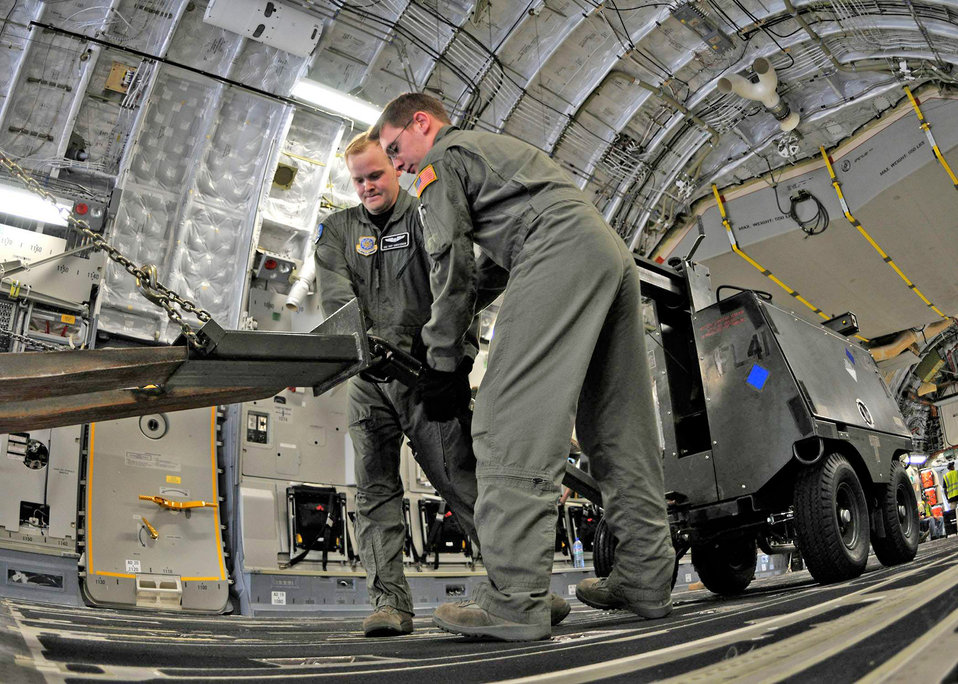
17th Air Force members support presidential visit to Ghana

Senior Airmen Toby Christiensen and Paul Hedges connect a floodlight to a forklift during offloading operations of aerospace ground equipment at Kotoka International Airport July 6 at Accra, Ghana. The Airmen are among more than 150 Airmen, Sailors and Marines in Ghana and Sailors aboard the USS Iwo Jima who form a task force supporting President Barack Obama's visit July 10 and 11. Airmen Christiensen and Hedges are loadmasters with the 8th Airlift Squadron from McChord Air Force Base, Wash.